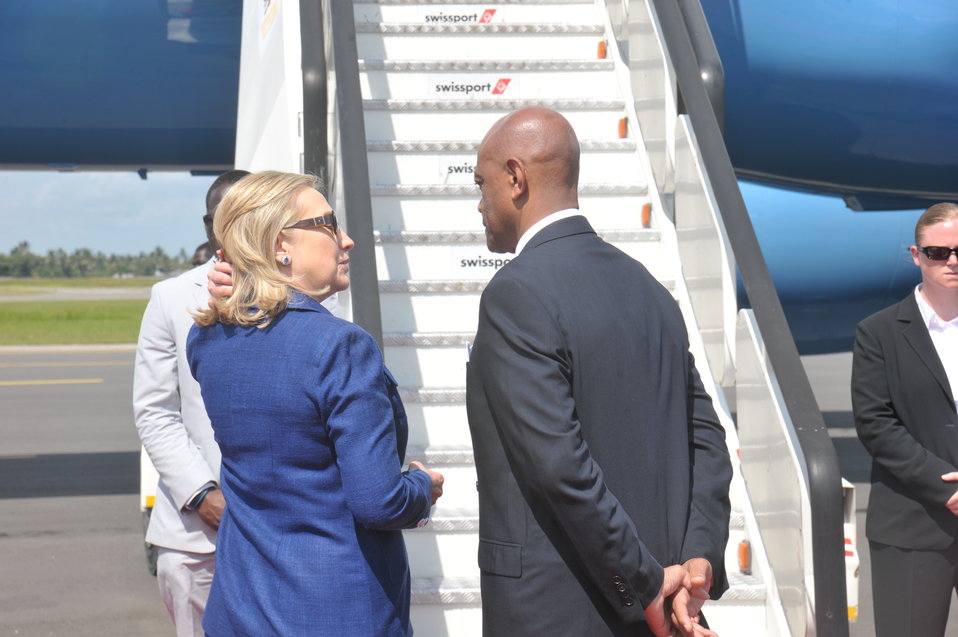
Secretary Clinton Speaks With Ambassador Lenhardt

U.S Secretary of State Hillary Rodham Clinton speaks with U.S. Ambassador to Tanzania Alfonso E. Lenhardt before departing Dar es Salaam, Tanzania, on June 13, 2011.